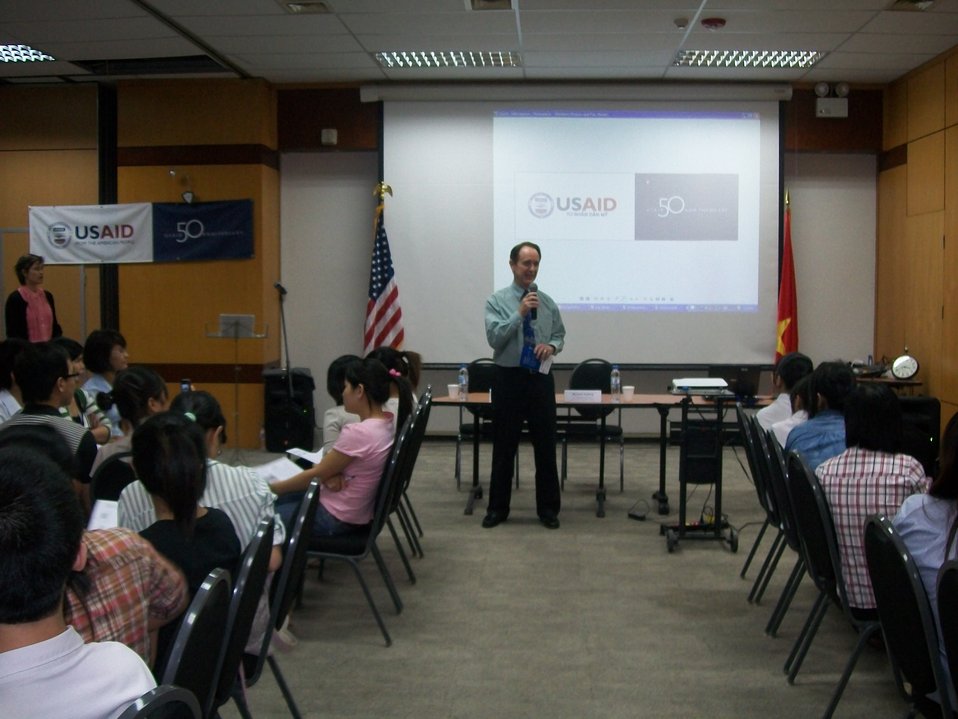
American Center and USAID host Debate Club on Higher Education

USAID/Vietnam Mission Director Francis Donovan address students and discusses the USAID-supported Higher Engineering Education Alliance Program with Arizona State University, Intel, and others.